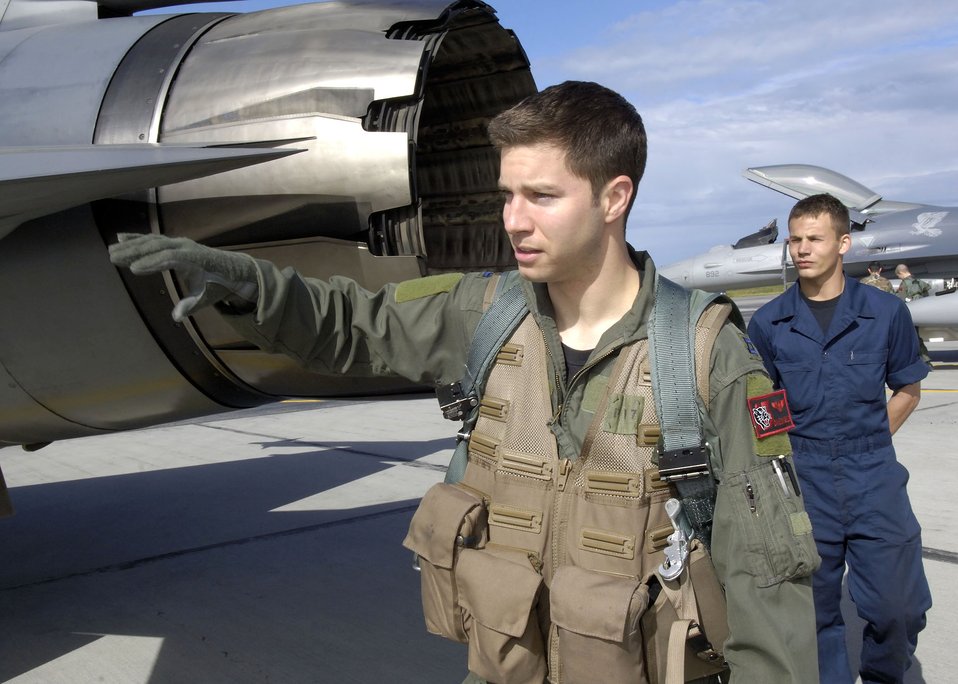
Misawa F-16 unit flying high at Cooperative Cope Thunder

Capt. David Deangelis and Airman 1st Class Robert Fields perform pre-flight checks on an F-16 Fighting Falcon at Eielson Air Force Base, Alaska, on July 19. The Airmen are with the 13th Fighter Squadron based at Misawa Air Base, Japan, and are participating in the exercise Cooperative Cope Thunder 06-3.